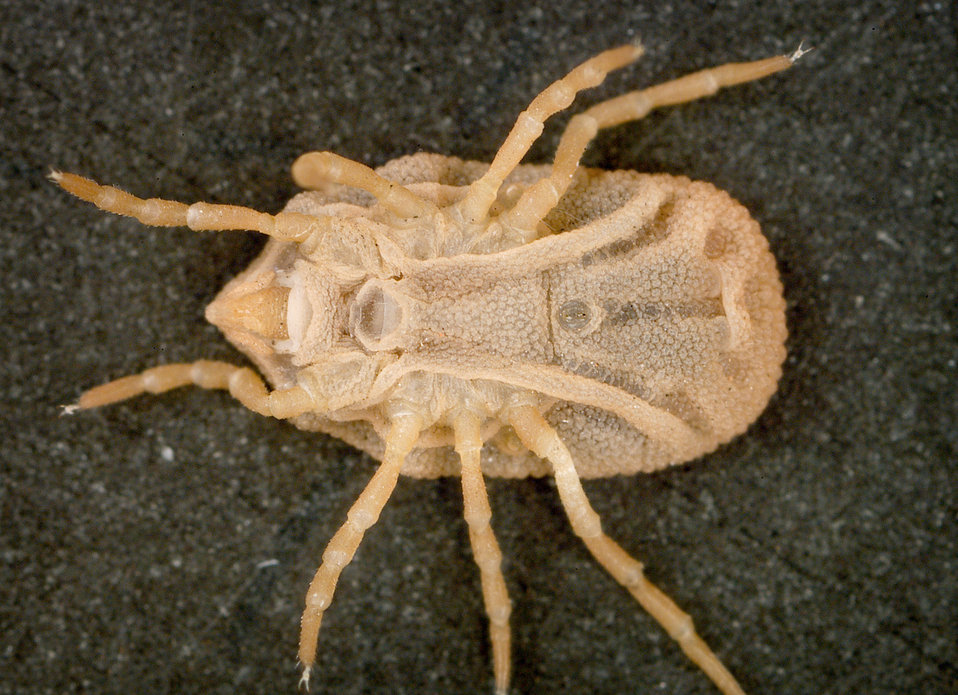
This is a ventral view of the 'soft tick' Carios kelleyi, formerly Ornithodoros kelleyi, or the 'Bat Tick'.